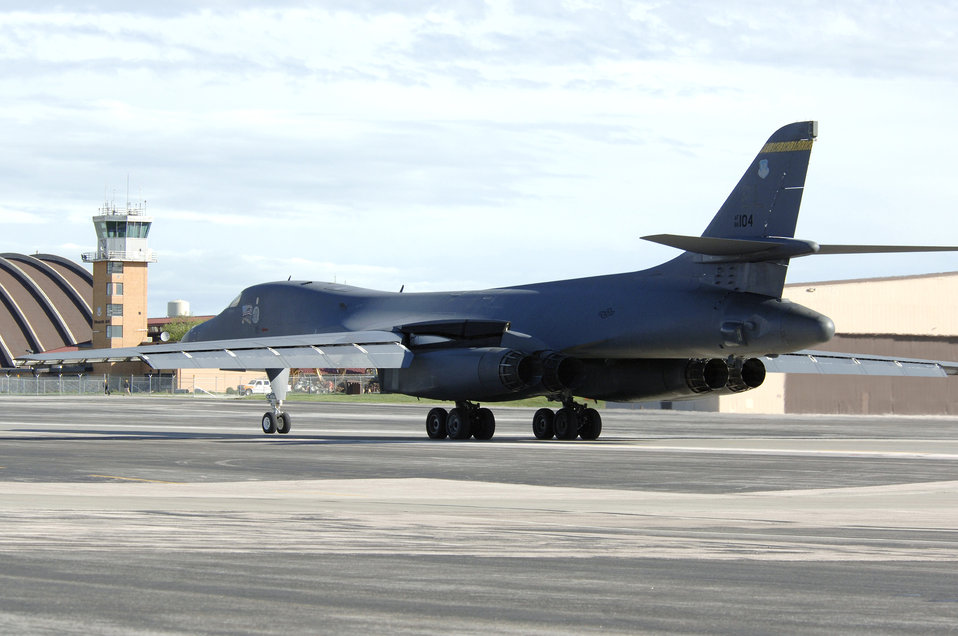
Exercise Badlands Express 06-03

A B-1 Lancer taxis at Ellsworth Air Force Base, S.D., on Tuesday, May 23, 2006, as part of Exercise Badlands Express 06-03. The exercise will prepare the base for an operational readiness inspection in July.